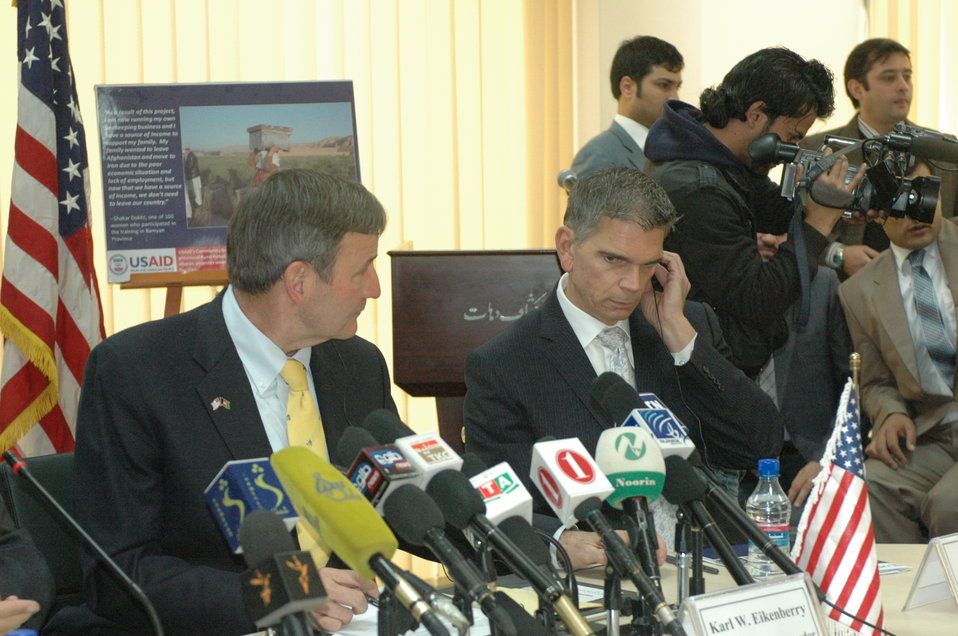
Community Based Stabilization Grants Ceremony, December 7, 2010